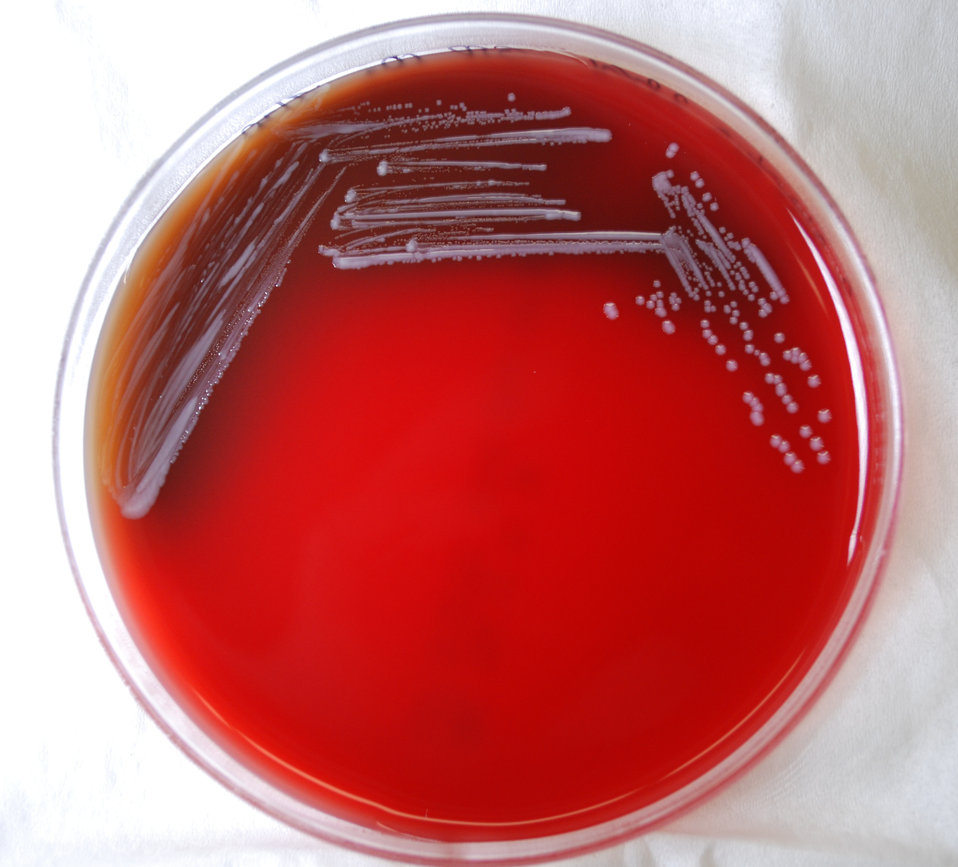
This photograph depicts the colonial morphology displayed by Gram-negative Brucella abortus bacteria, which was grown on a medium of sheep's blood agar (SBA), for a 72 hour time period, at a temperature of 37�C, and incubated in a CO2 incubator. For a closer view of these bacterial colonies, see PHIL 12281.